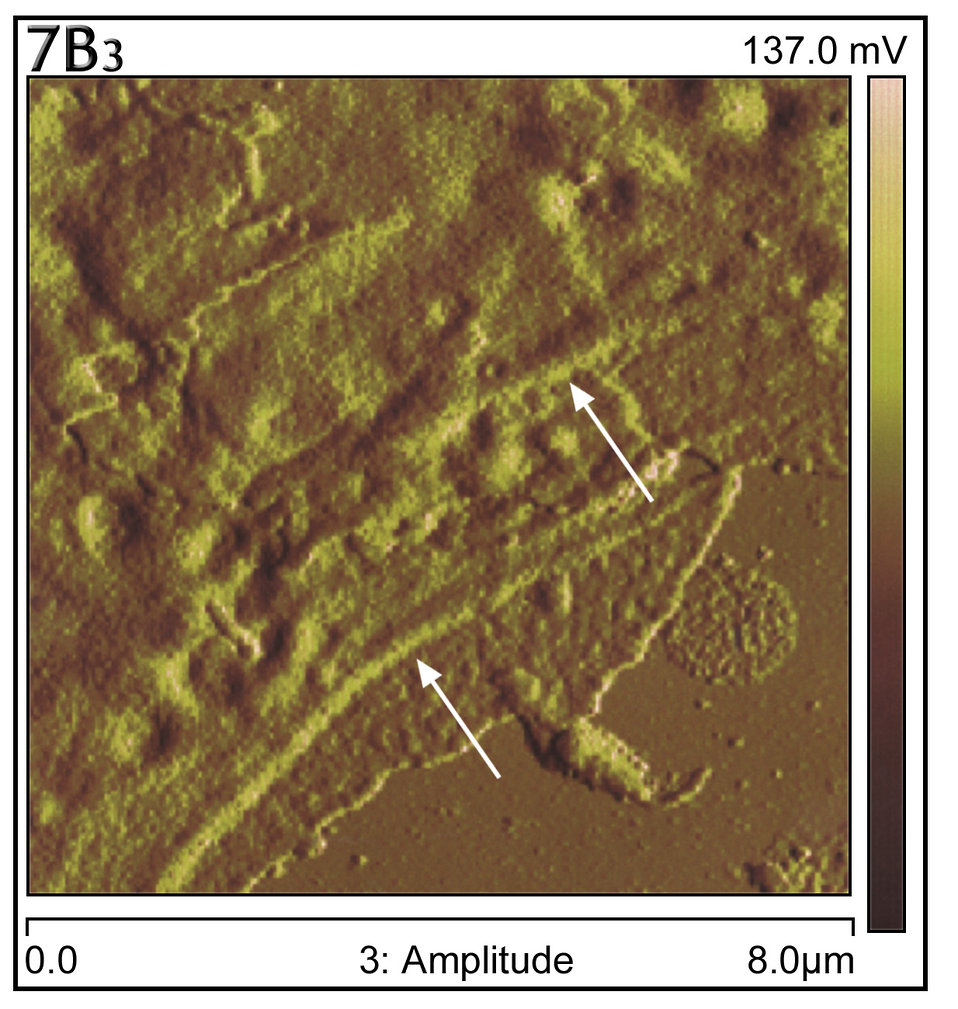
This AFM showed gross thickening of cell cytoplasmic microfilaments just beneath the Vero cell plasma cell membrane (arrows).